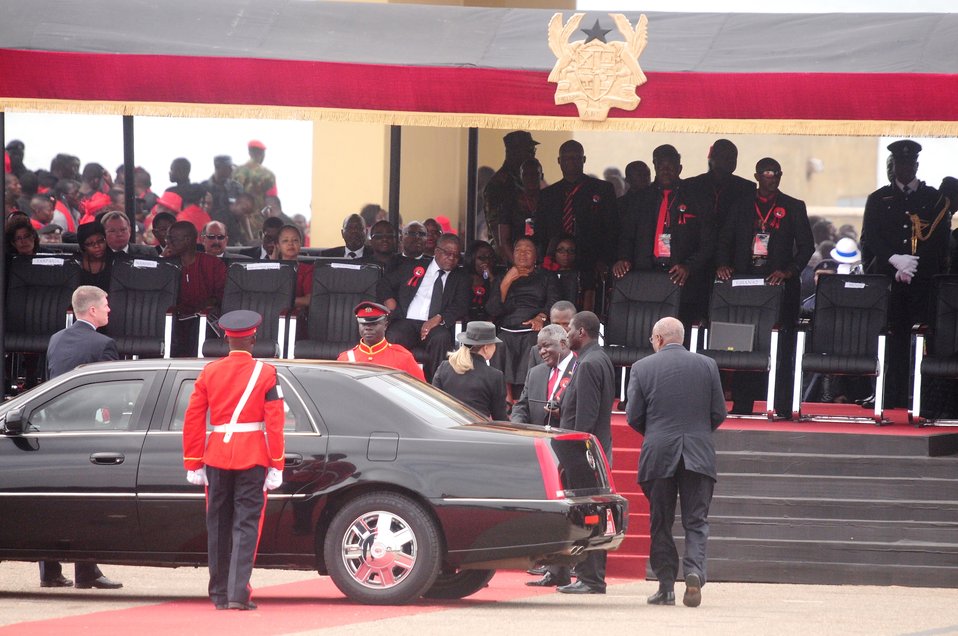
Secretary Clinton Is Greeted By Ghanaian Honor Guard

U.S. Secretary of State Hillary Rodham Clinton is greeted by Ghanaian Honor Guard upon her arrival at President John Atta Mills' funeral in Accra, Ghana, on August 10, 2012.